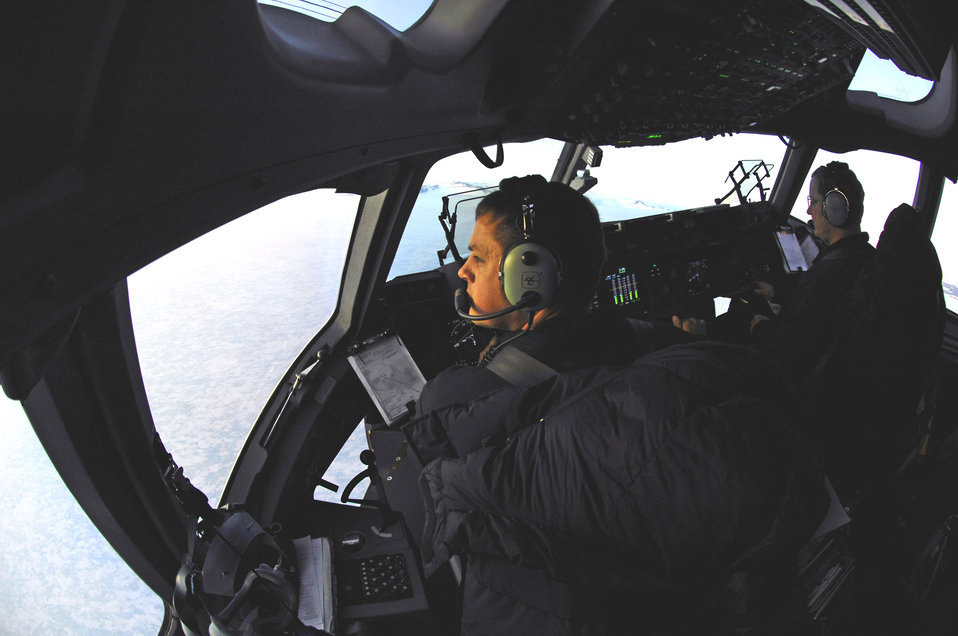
Winter flights to Antarctica wrap up

Capt. Cory Simmons and Lt. Col. Scott Weichert approach Pegasus White Ice Runway, Antarctica, in their C-17 Globemaster III Aug. 25 during a winter fly-in mission for Operation Deep Freeze. A C-17 and 31 Airmen from McChord Air Force Base, Wash., conducted the annual winter fly-in augmentation of scientists, support staff, food and equipment for the U.S. Antarctic Program at McMurdo Station, Antarctica.